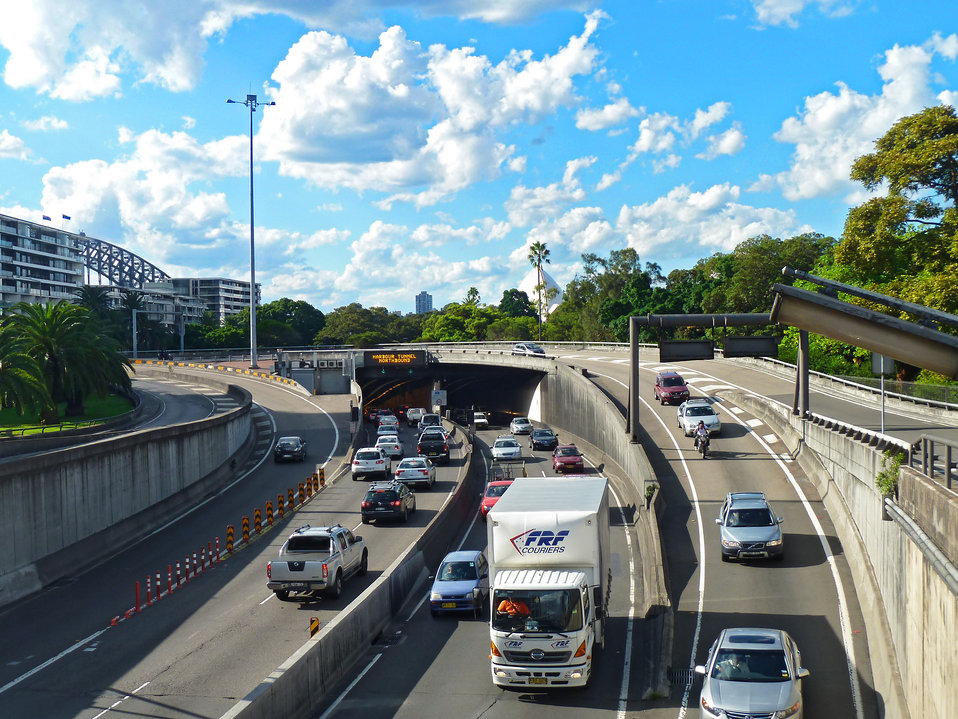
Cahill Expressway and Sydney Harbour Tunnel, from Conservatorium Road, Sydney, New South Wales, Australia.